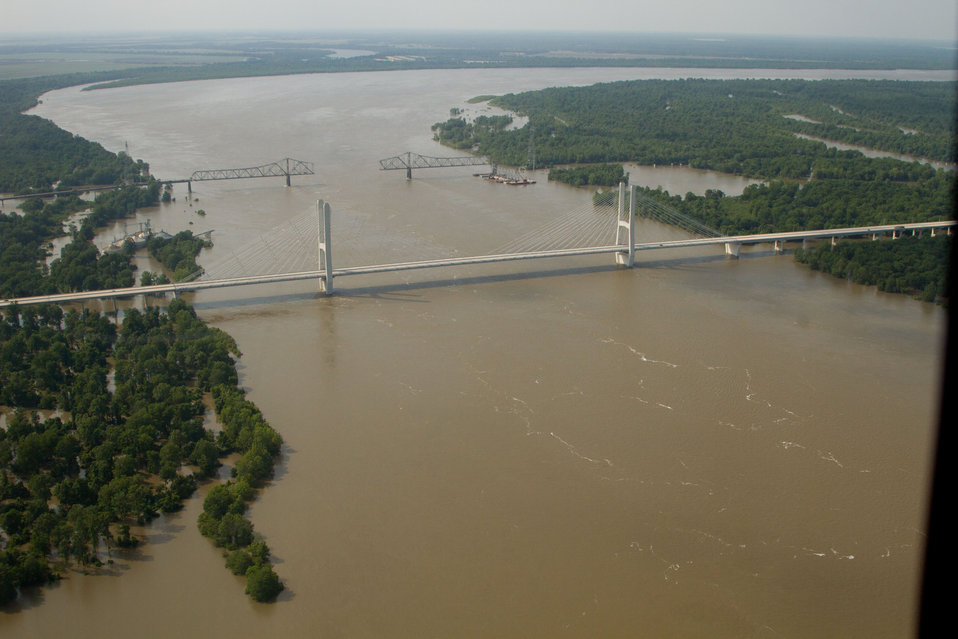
Aerial view of the Greenville Bridge spanning the Mississippi River at flood levels, on Thursday, May 19, 2011. Riverfront in Greenville, Mississippi avoided major damage with temporary levees around specific structure. The aerial platform was a UH-60 Blackhawk commanded by Col. Kennedy and his flight crew from the Army Aviation Support Facility #1 at Hawkins Field in Jackson.